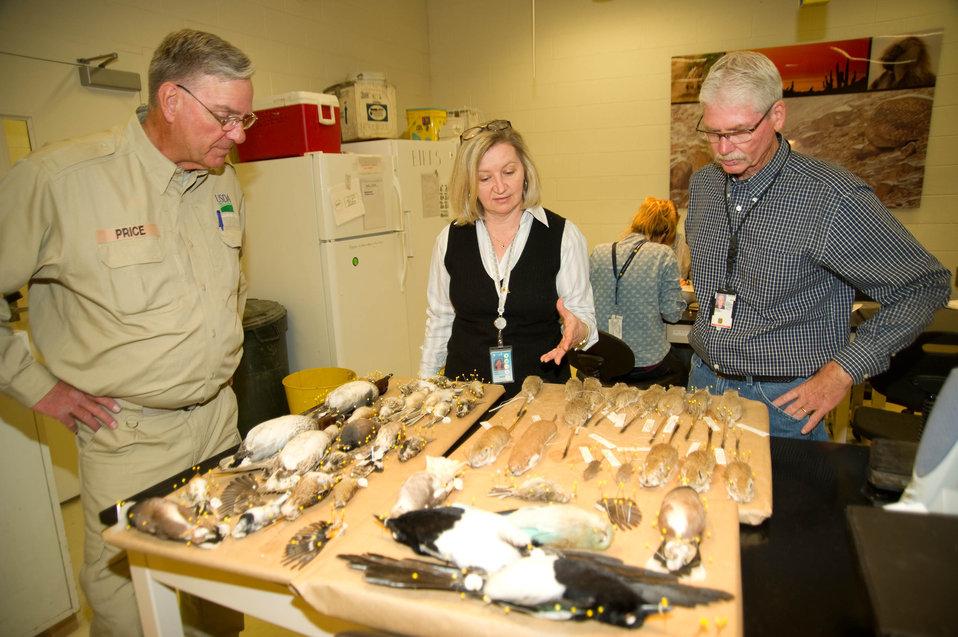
(L to R) U.S. Department of Agriculture (USDA) Animal and Plant Health Inspection Service (APHIS) Wildlife Biologist Keel Price, Smithsonian Institution National Museum of Natural History Research Scientist and Manger in the Feather Identification Lab Dr. Carla Dove, and USDA APHIS Wildlife Biologist George Graves look over the animals ready for identification that were sent back from Afghanistan on Tuesday, Mar. 19, 2013.